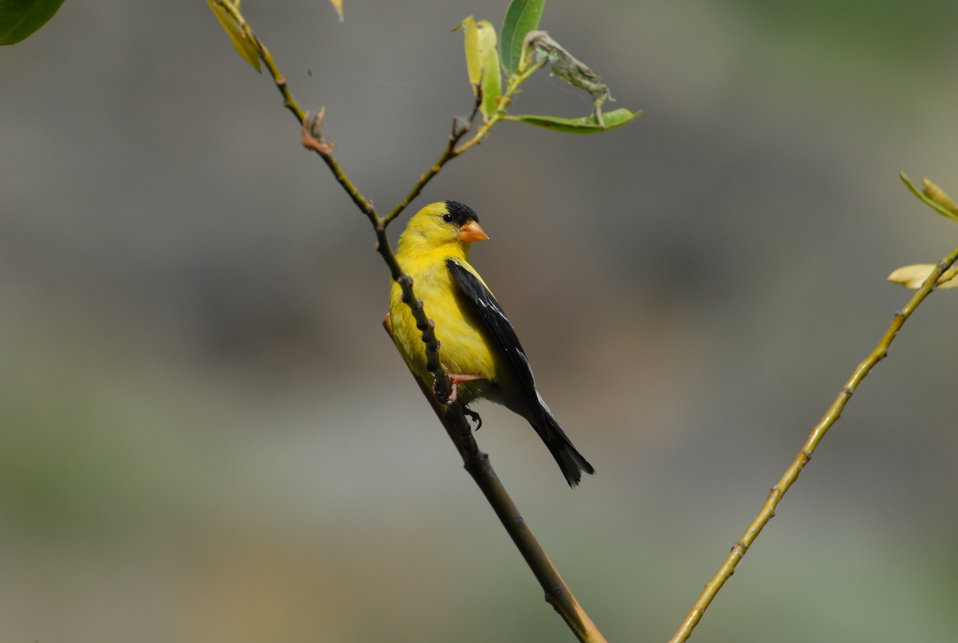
American Goldfinch (male)

American goldfinch perches on a branch